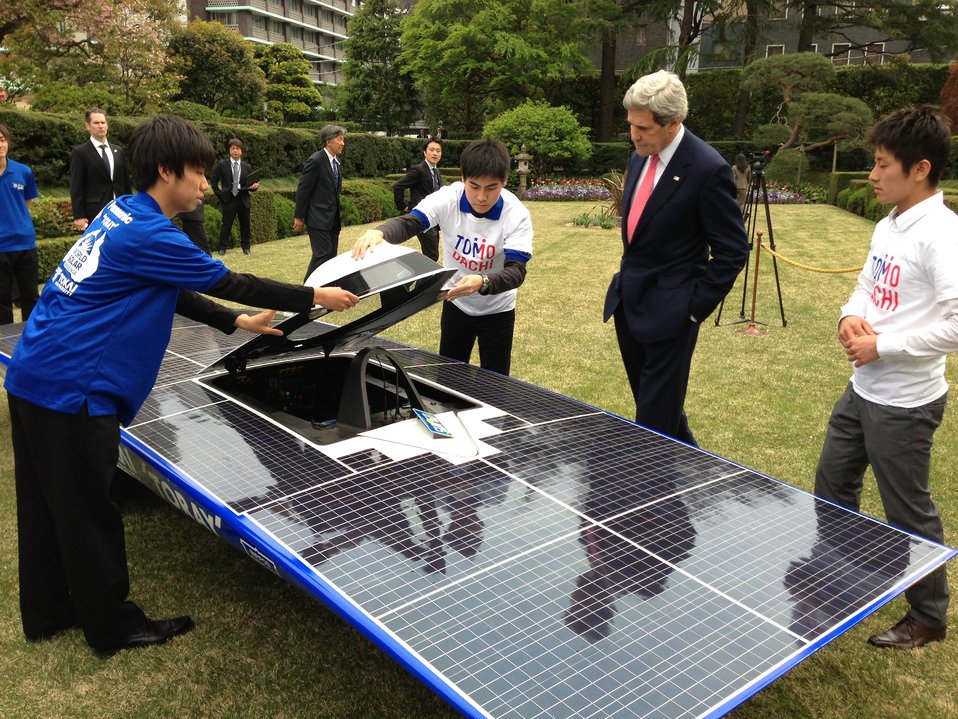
Secretary Kerry Admires Solar-Powered Car Built by TOMODACHI Initiative Youth Engagement Program

U.S. Secretary of State John Kerry admires a solar-powered car built by members of the TOMODACHI Initiative youth engagement program in Tokyo, Japan, on April 14, 2013.